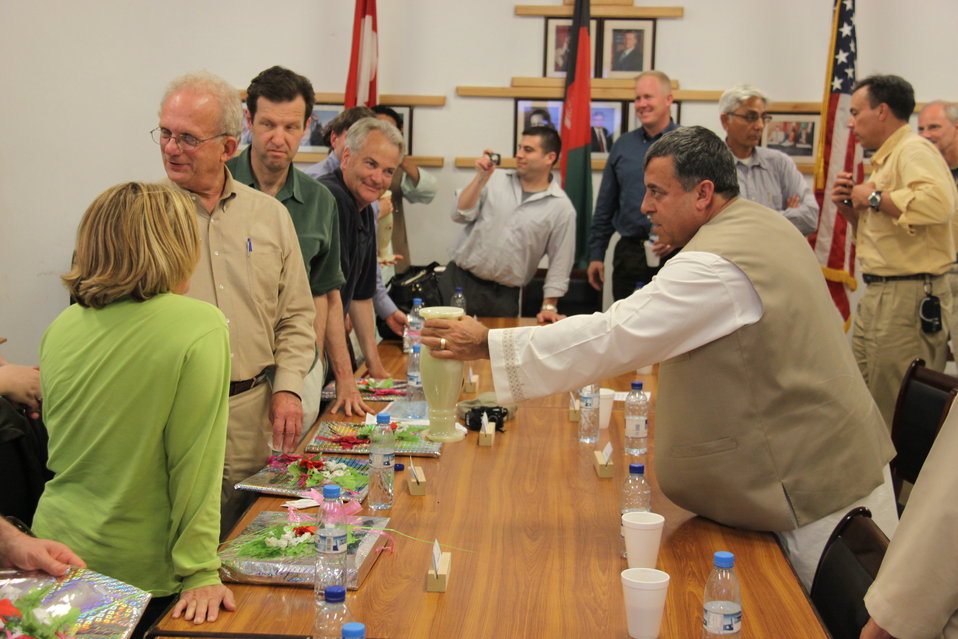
Meeting with Local Leaders in Kandahar